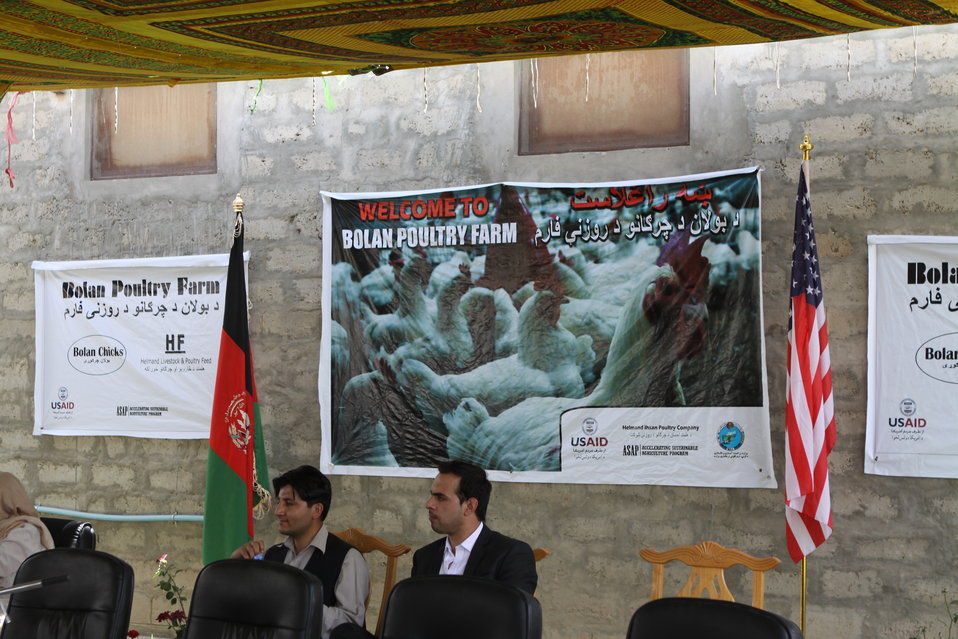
Bolan Poultry Farm